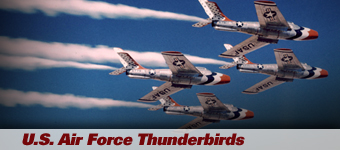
Thunderbirds and F-84 Thunderjets

Air Force Thunderbirds in their first aircraft, the F-84 Thunderjet.